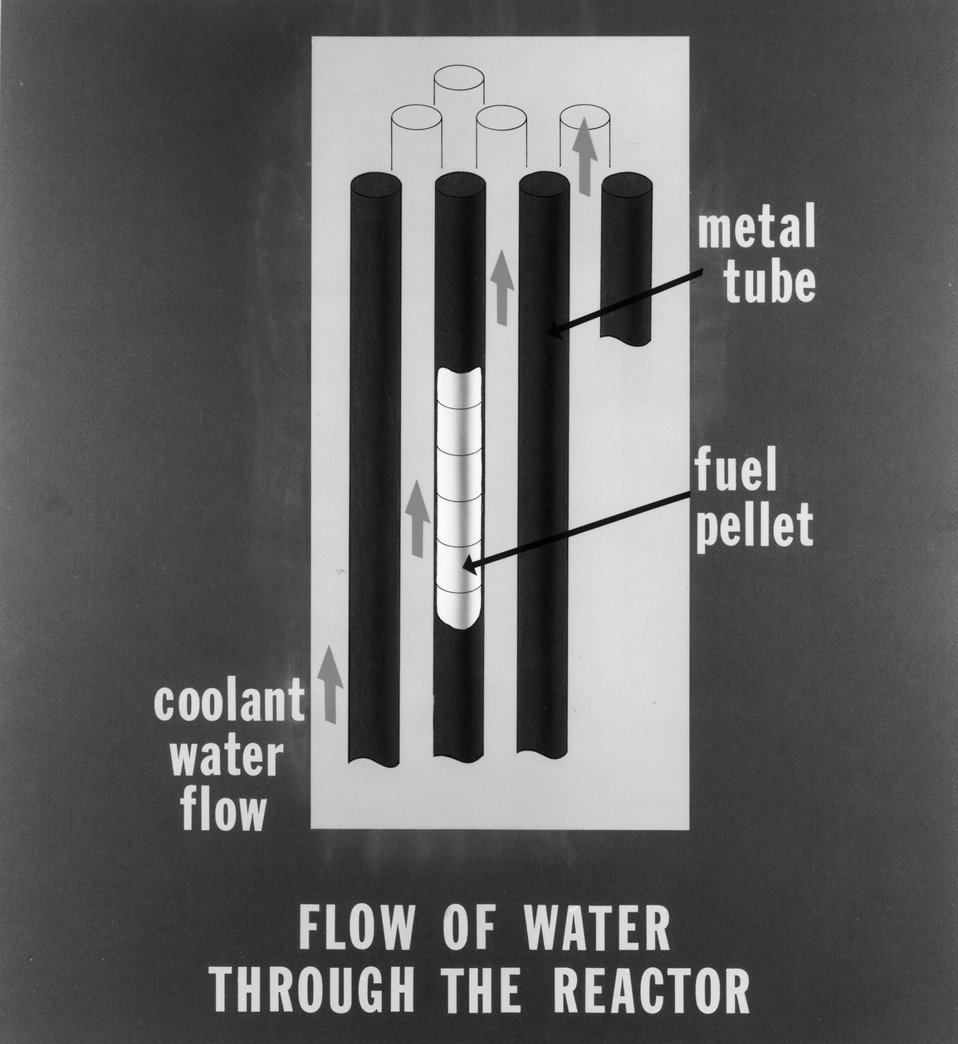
Concept of water being heated as it flows past fuel rods, Shippingport. c. undated